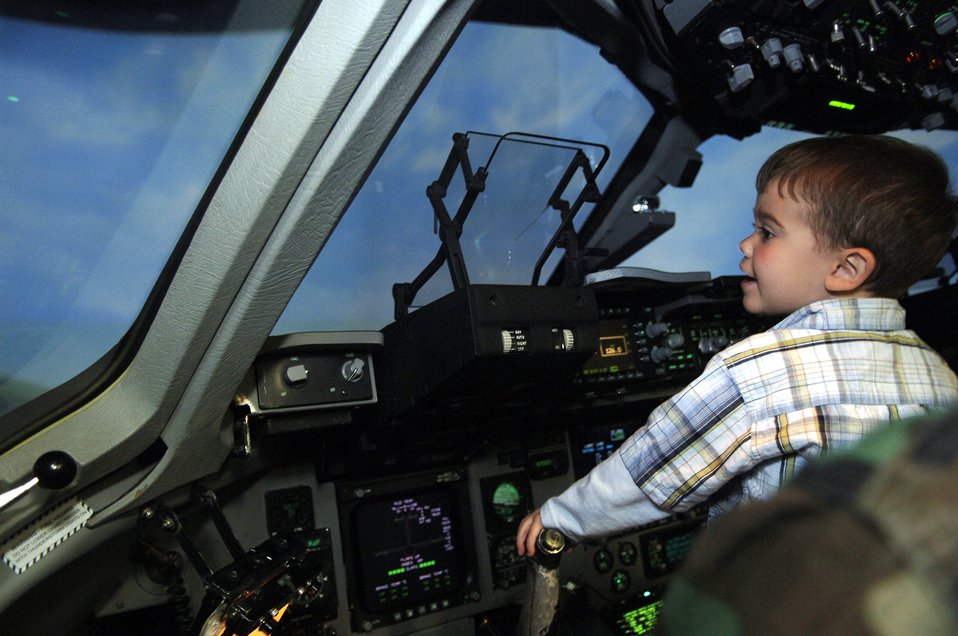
Child becomes pilot for a day at Charleston

Zachary Moore practices flying a C-17 Globemaster III in the flight simulator April 20 at Charleston Air Force Base, S.C. Members of the 17th Airlift Squadron chose the 3 year old him for the Pilot for a Day program because he was diagnosed with cancer at 18 months. Zachary is the son of Capt. Christopher Moore, the 437th Airlift Wing chief of Public Affairs.